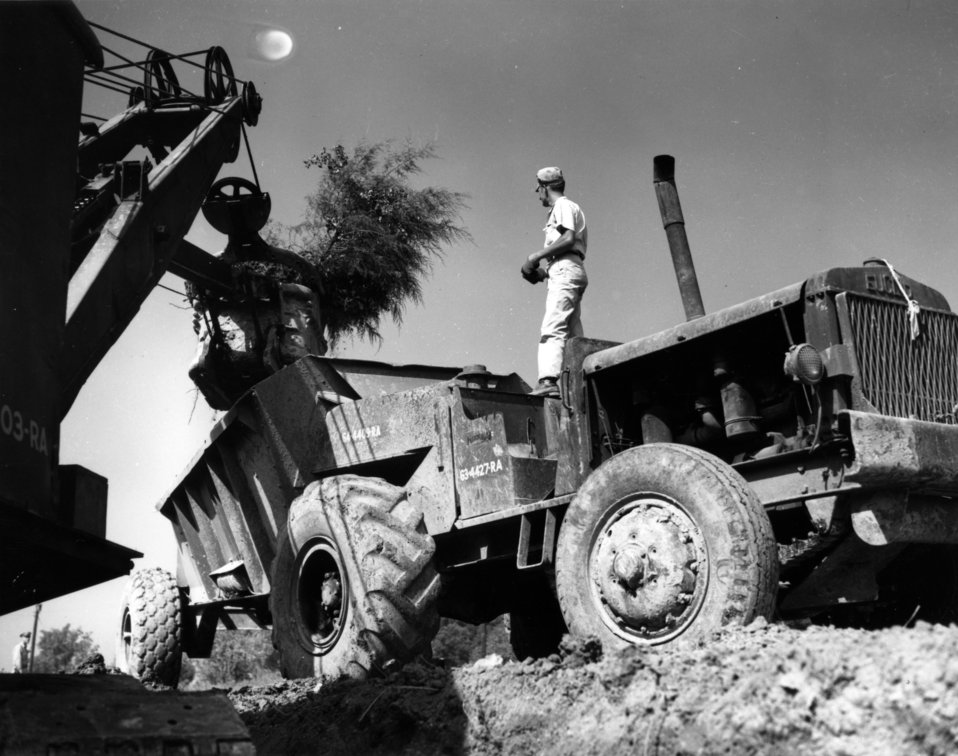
Construction activity at Oak Ridge